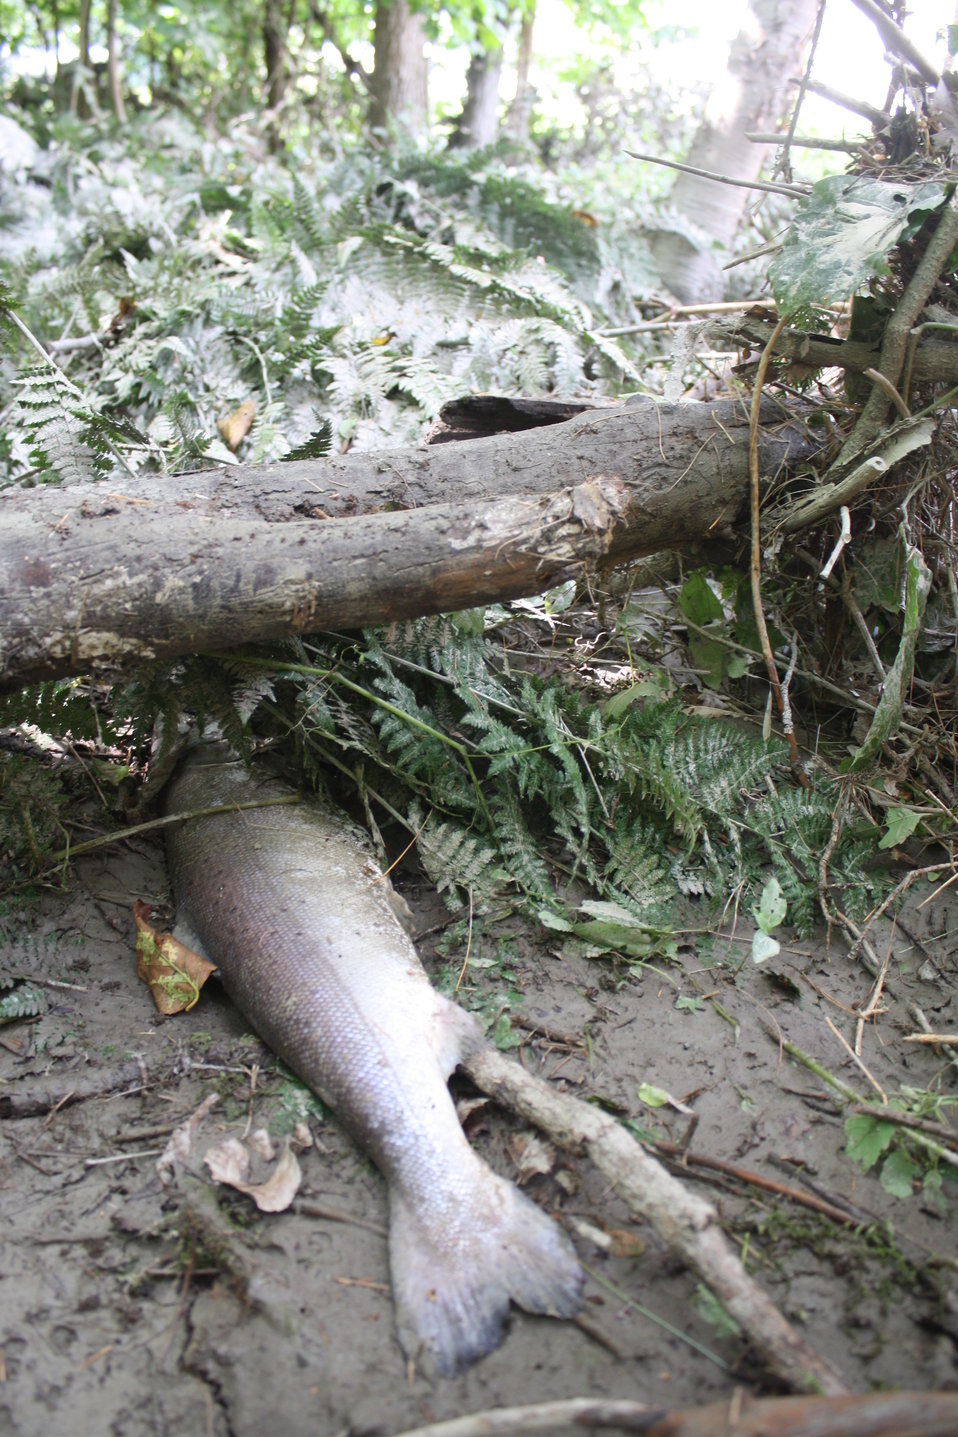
Dead fish after Hurricane Irene flood event

High flood waters breached some circular fish rearing pools at White River National Fish Hatchery during Hurricane Irene. Some fish escaped, and were left stranded by receding flood waters.